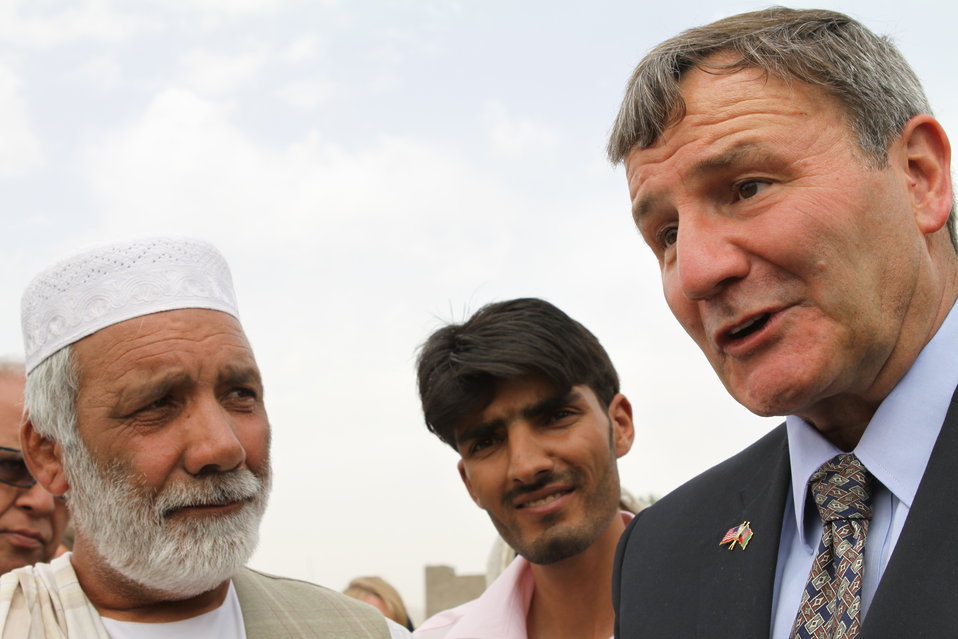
100525 Hirat Marble Conference 641